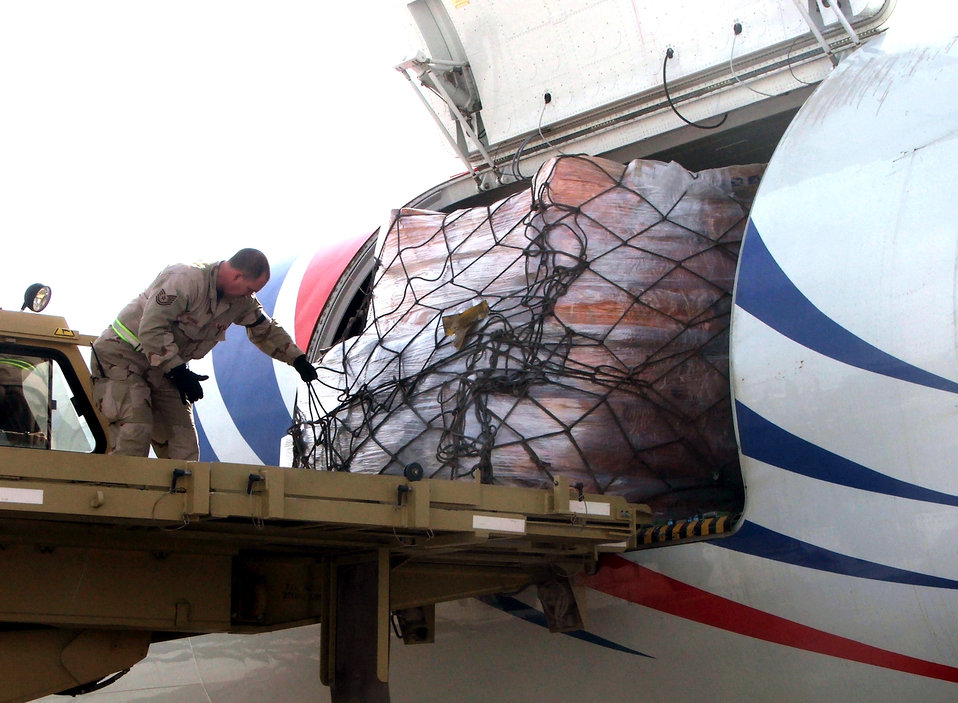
Air terminal operators keep OEF freight, passengers moving

KARSHI-KHANABAD AIR BASE, Uzbekistan -- Tech. Sgt. Bringham Norman helps move a pallet filled with mail here recently. He is an air transportation craftsman with the 416th Expeditionary Mission Support Squadron's Air Terminal Operations Center from Maxwell Air Force Base, Ala.